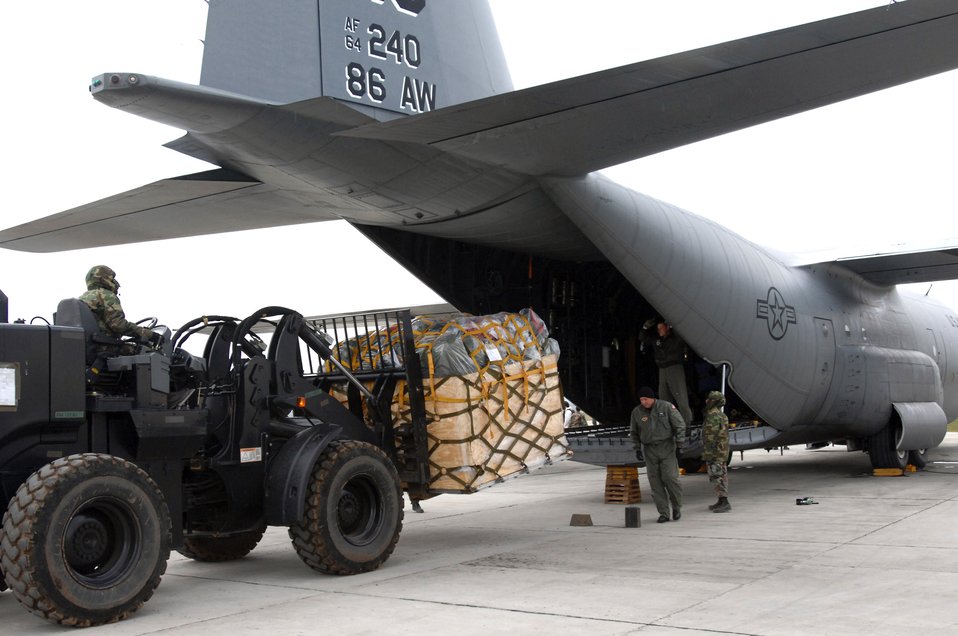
Logistics key to establishing deployed NATO mission operations

Airmen from the 404th Expeditionary Air Base Squadron unload pallets from a 86th Airlift Wing C-130 Hercules dropping off cargo and personnel here March 25. A four-man team of Airmen received and processed more than 500,000 pounds of cargo here toward building up U.S. operations at the base in support of the NATO summit. The U.S forces are augmenting NATO by providing infrastructure and aircraft for the duration of summit in Bucharest, Romania, April 2-4.